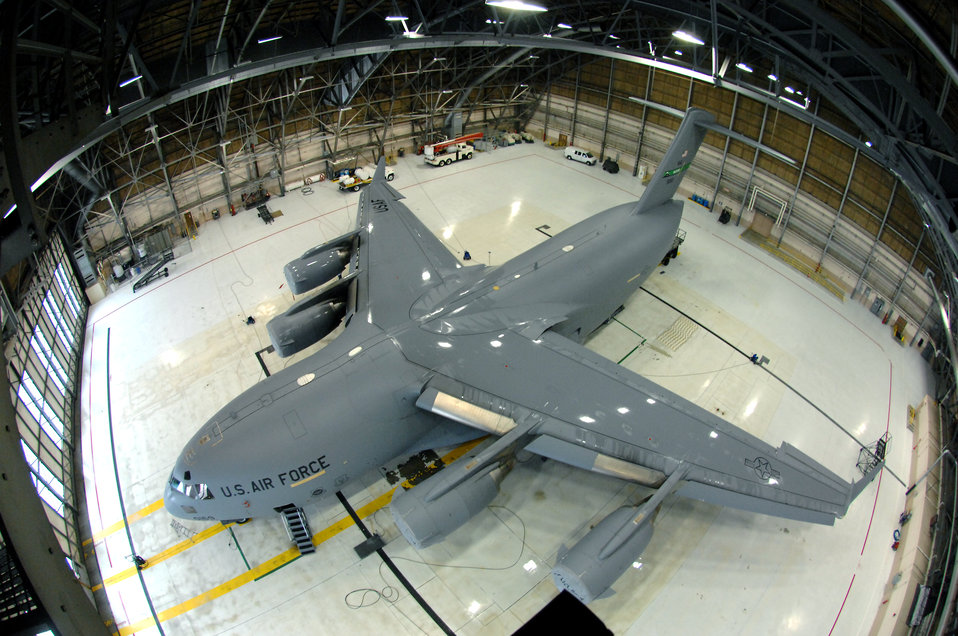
Glimmering Globemaster III

A C-17 Globemaster III sits in a hangar at McChord Air Force Base, Wash., Jan. 29 after being pressure washed during a routine home station inspection. Regular washing and rinsing prevent and control aircraft corrosion.